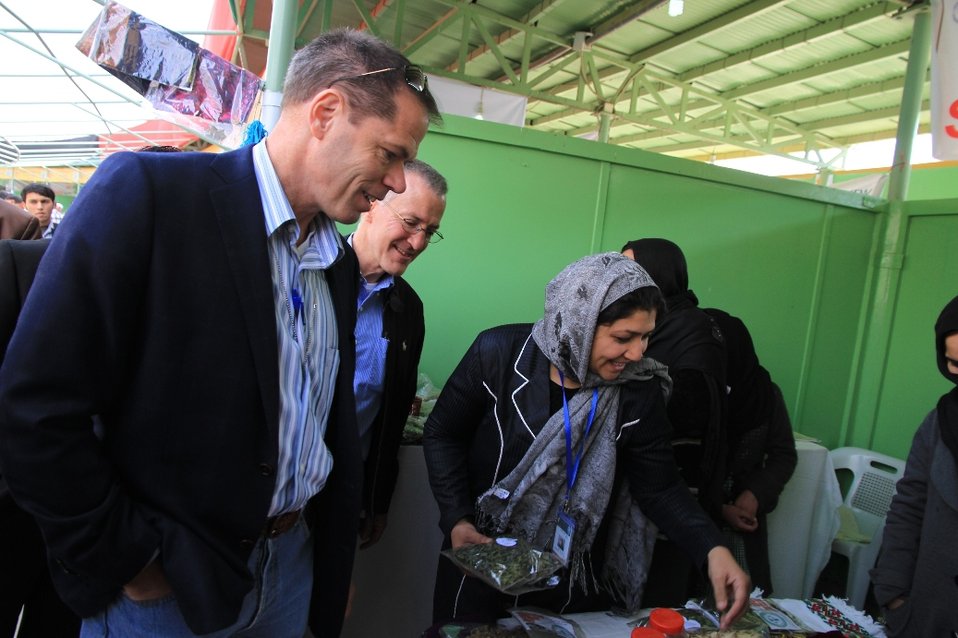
Ag.Fair, October 2013

Mahbooba Hashimi (center) Head of Association of Handicrafts and Agribusiness, exhibits products to William Hammink and Larry Sampler at Kabul International Ag.Fair, October 2013